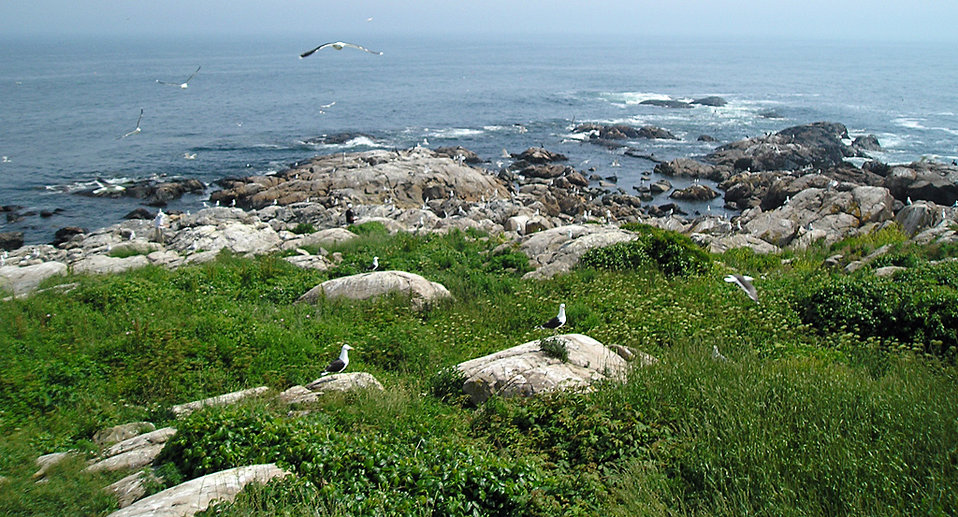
Thacher Island National Wildlife Refuge off of Rockport, Massachusetts